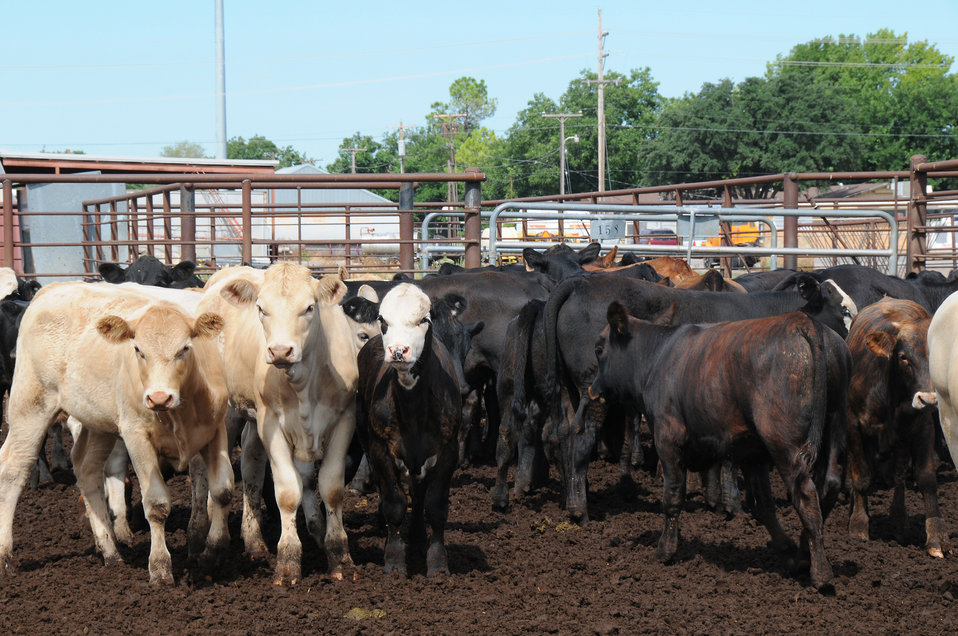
Beef cattle wait in a feedlot in Medicine Park, Oklahoma on August 13, 2009.